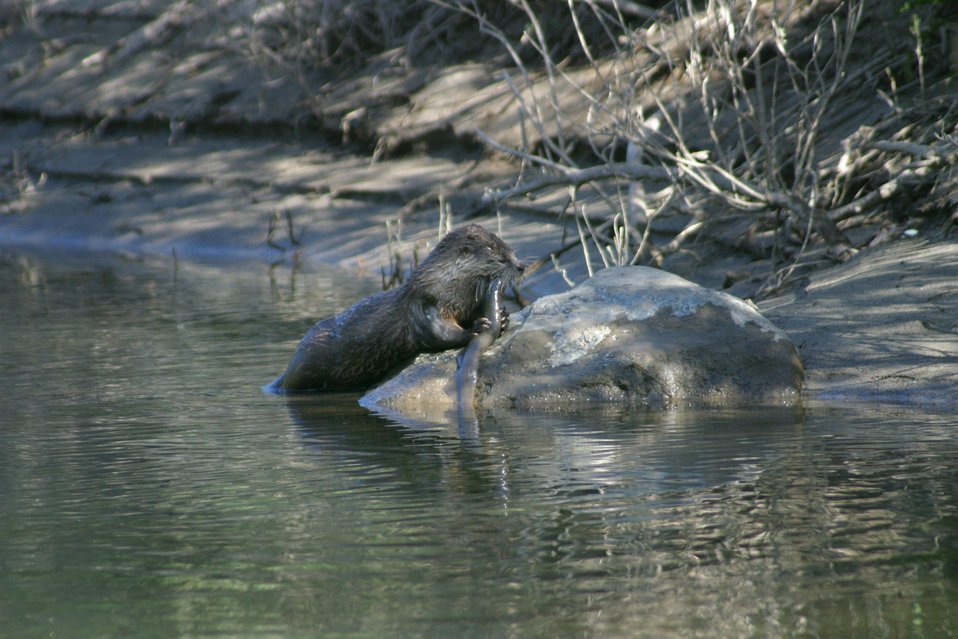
Wild section of the Rogue River from Grave Creek to Foster Bar May 19 to May 22.